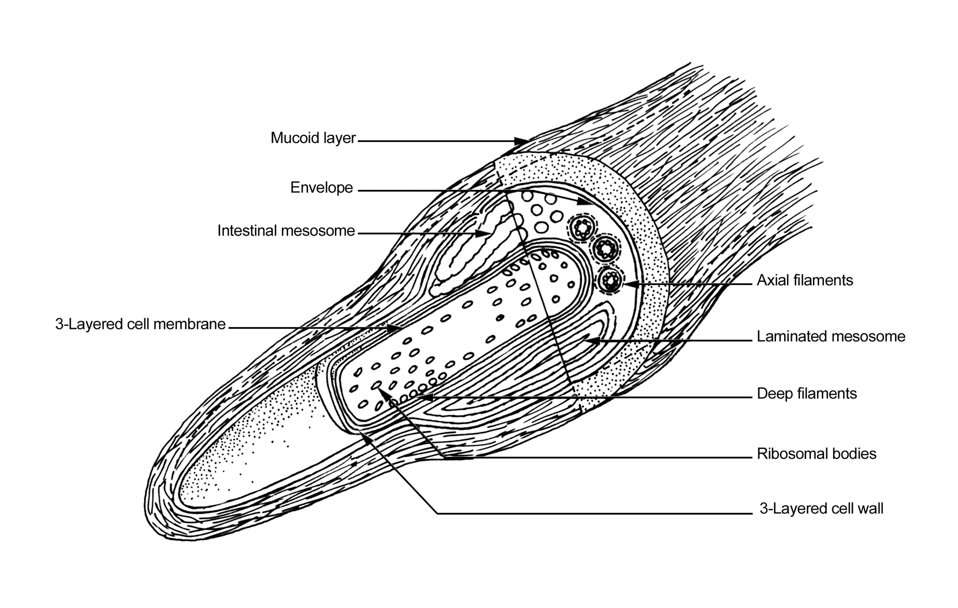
An illustration of a Treponema pallidum bacterium.